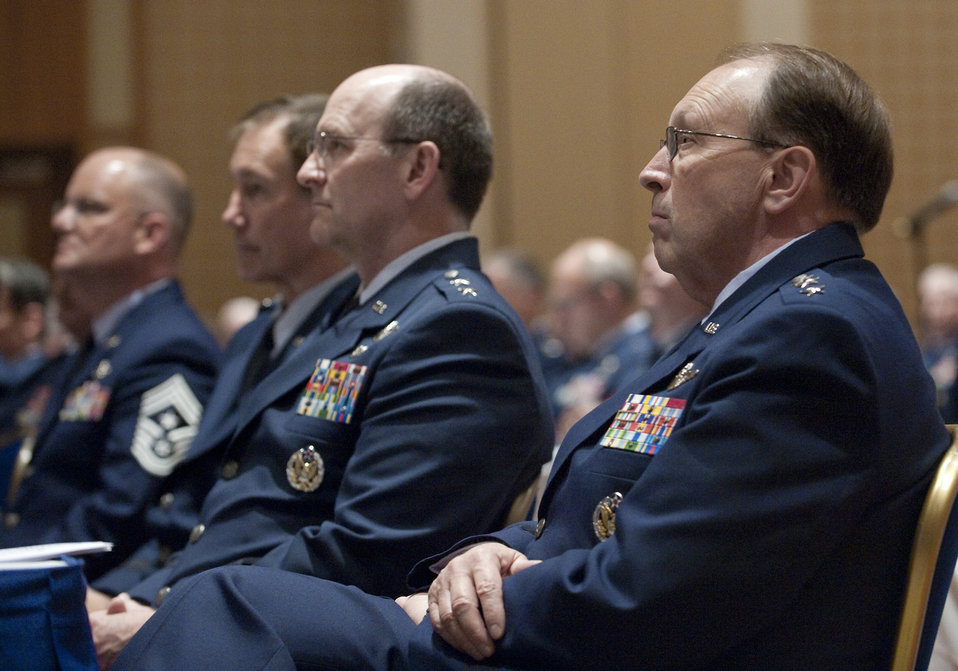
Air Force Reserve Command Senior Leader Conference

From right to left, Lt. Gen. Charles Stenner, chief of the Air Force Reserve and the commander of Air Force Reserve Command; Maj. Gen. James Jackson, deputy to the chief of the Air Force Reserve; Maj. Gen. Craig Gourley, the vice commander of Air Force Reserve Command; and Chief Master Sgt. Dwight Badgett, the Air Force Reserve Command command chief, listen as Secretary of the Air Force Michael Donley addresses senior leaders of the Air Force Reserve Command on May 16, 2011, during their annual conference in Washington, D.C.